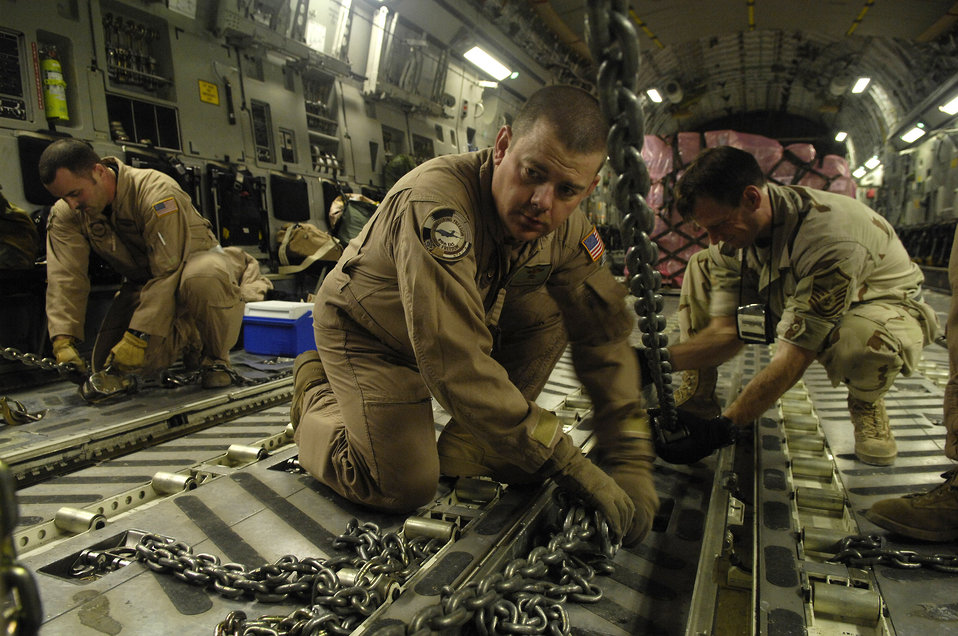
Getting ready to resupply the troops

Airmen from the 816th Expeditionary Airlift Squadron at an air base in Southwest Asia prepare a C-17 Globemaster III for an airdrop mission Jan. 14 to deliver humanitarian supplies to coalition forces in Afghanistan